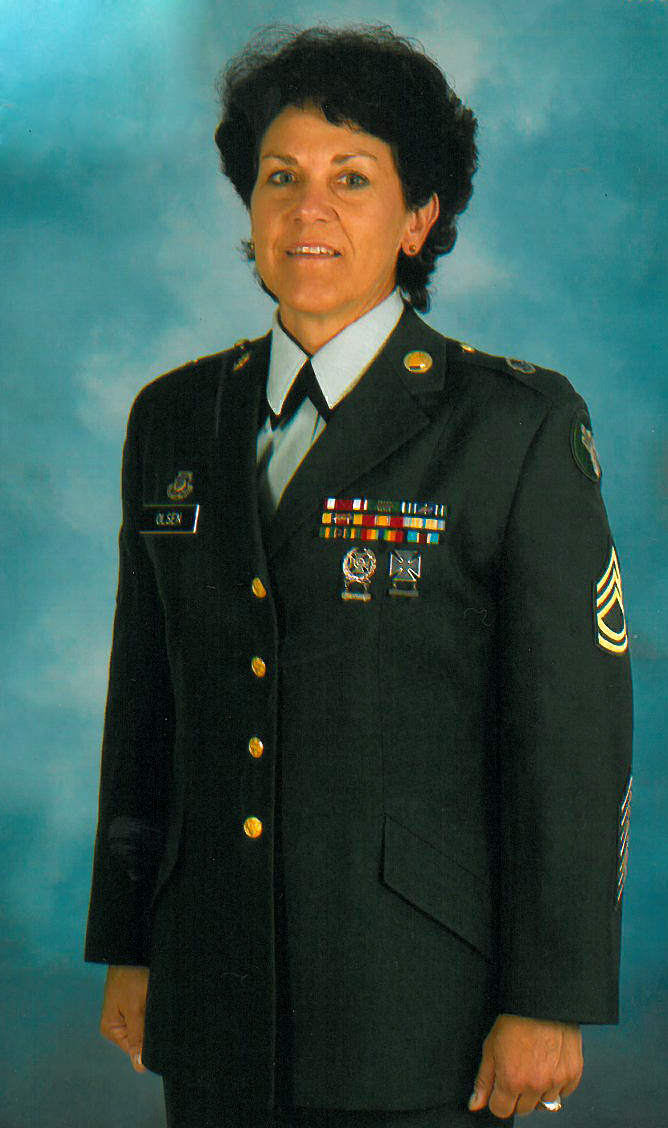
Christine Olsen

Christine D. Olsen served 25 years in the U.S. Army (1982-2007) and retired as a Master Sergeant in 2007. She is currently the administrative assistant at Red Bluff Fish and Wildlife Office in California.